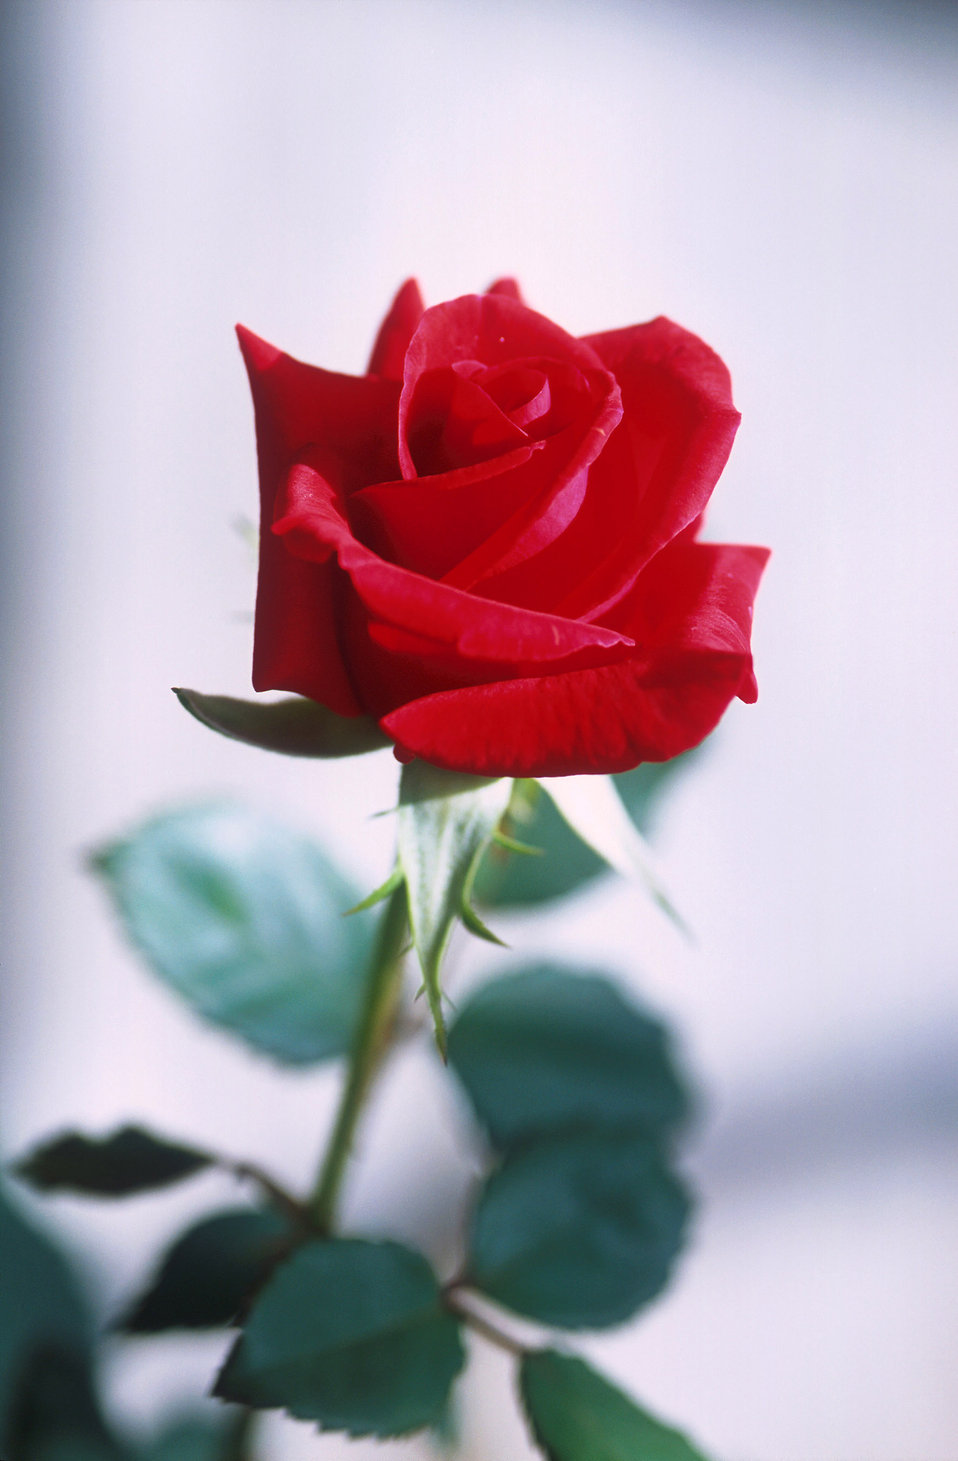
The U.S. Department of Agriculture’s (USDA) Agricultural Research Service (ARS) is researching ways to keep valuable floral and nursery crops like roses and woody ornamentals safe from the many pests that plague them.